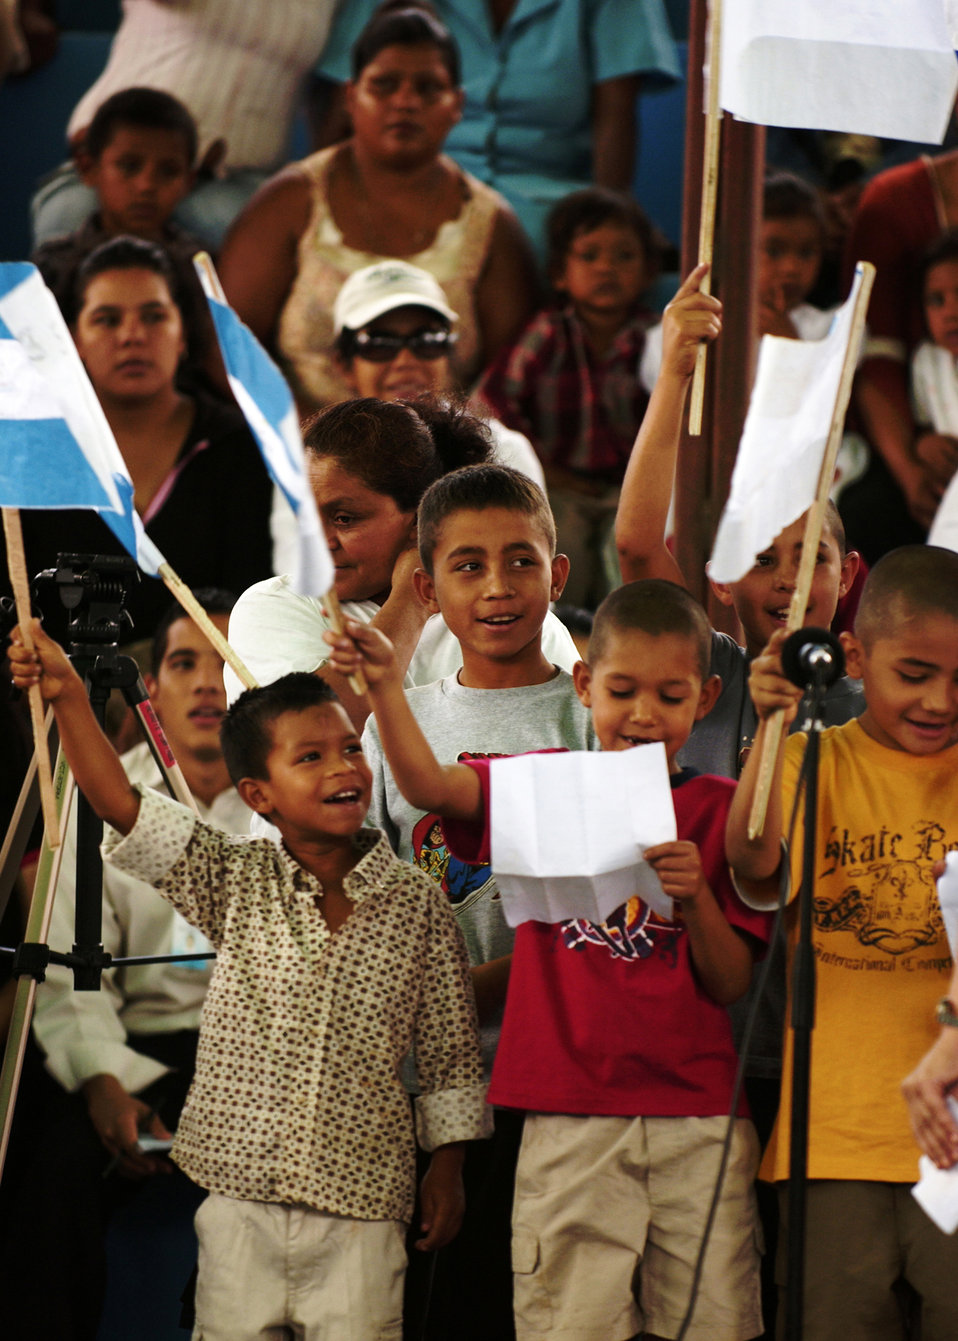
New Horizons Nicaragua 2007 closes out with ceremony

Children from the ABC Feed the Children Orphanage sing a song of friendship to the military members who carried out New Horizons - Nicaragua 2007 during the mission's closing ceremony April 27. The exercise participants donated more than $500, and 100 toys and books to that and another orphanage in the Carazo district of Nicaragua.